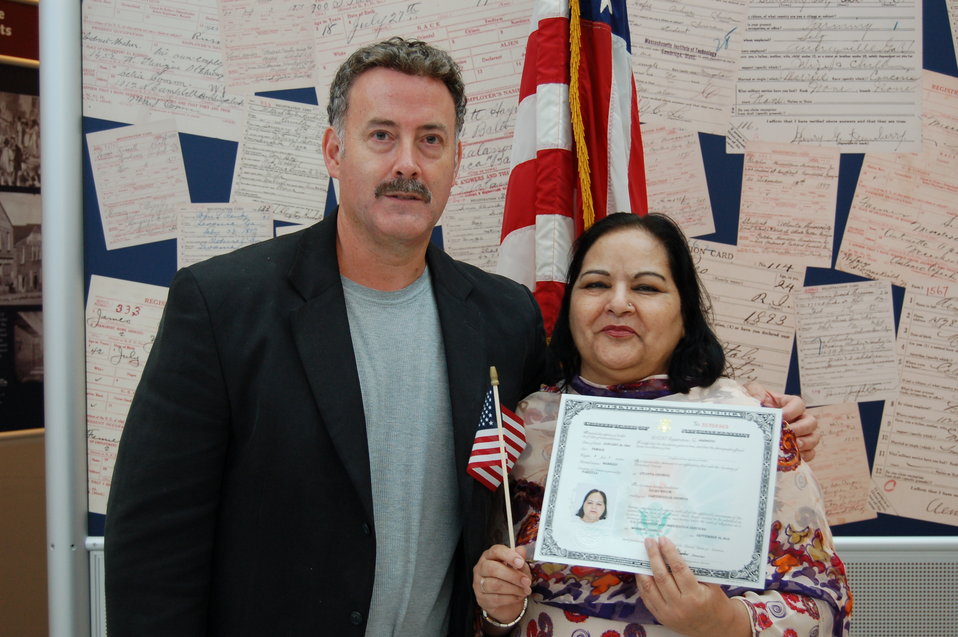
New Citizens